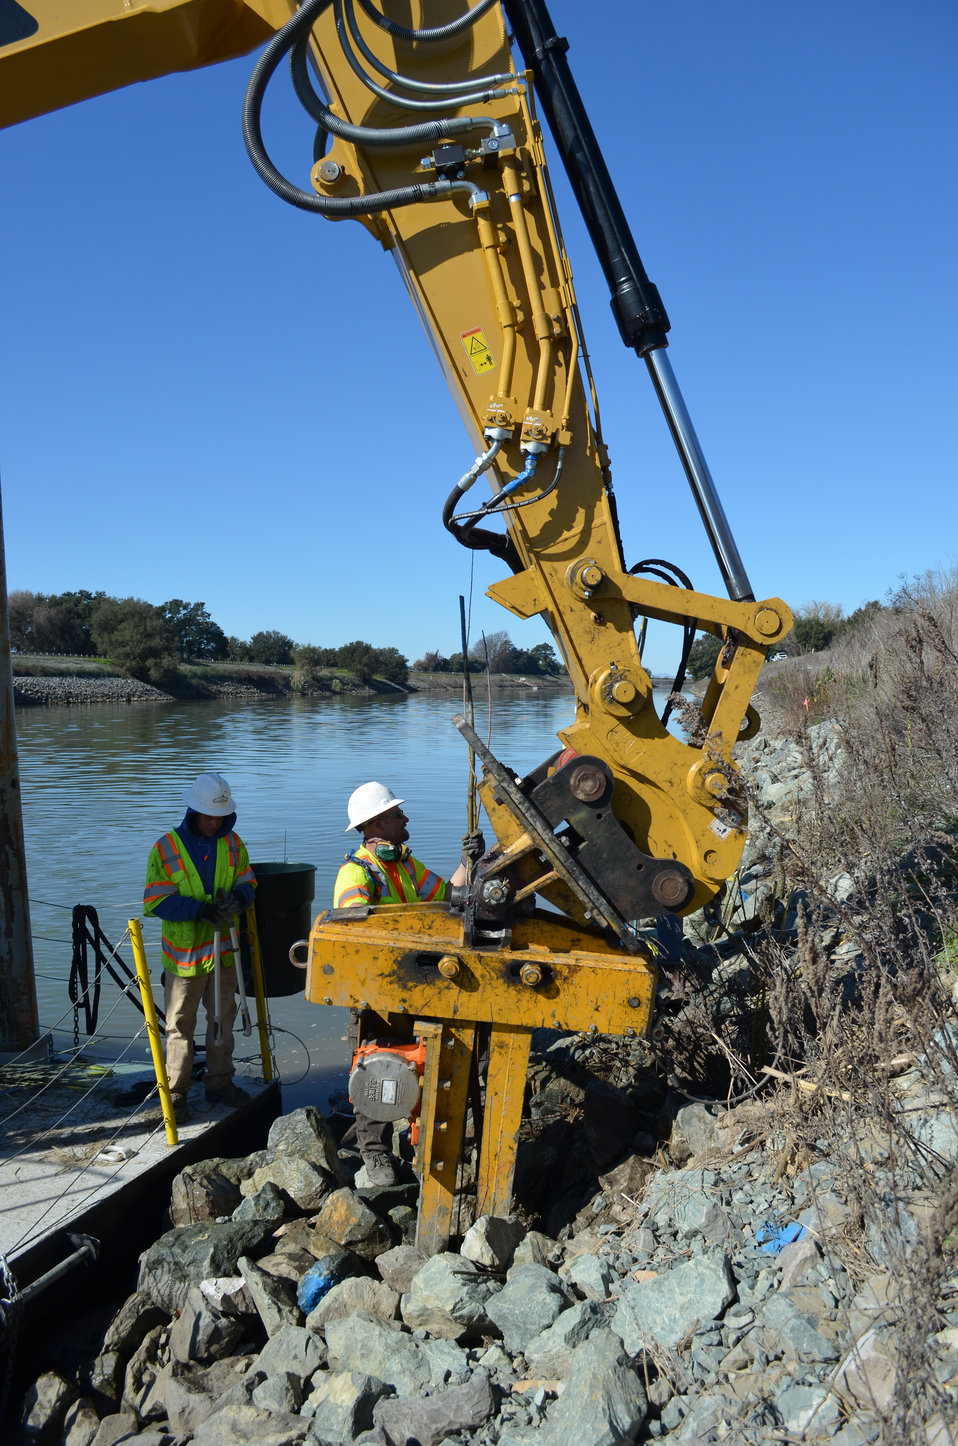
Planting willow poles along Sacramento River

Contract workers plant willow poles along the Sacramento River near Paintersville, Calif., Feb. 11, 2013, as part of a U.S. Army Corps of Engineers Sacramento District project to preserve riparian habitat following emergency levee erosion repairs between 2007 and 2009. The district worked with the U.S. Fish and Wildlife Service and National Marine Fisheries Service to design the project for habitat benefit, and is the first Corps district to receive a variance under the Corps’ levee vegetation policy to plant willows near the levee after engineering analysis showed they won’t threaten the levee.